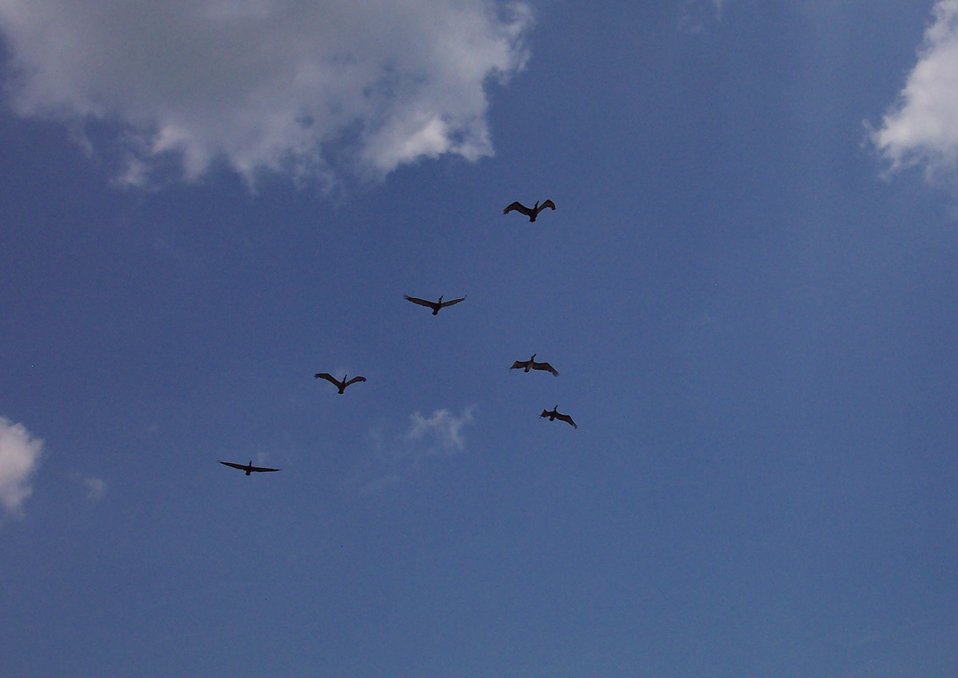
Pelicans flying overhead near Fort Moultrie on Sullivans Island.